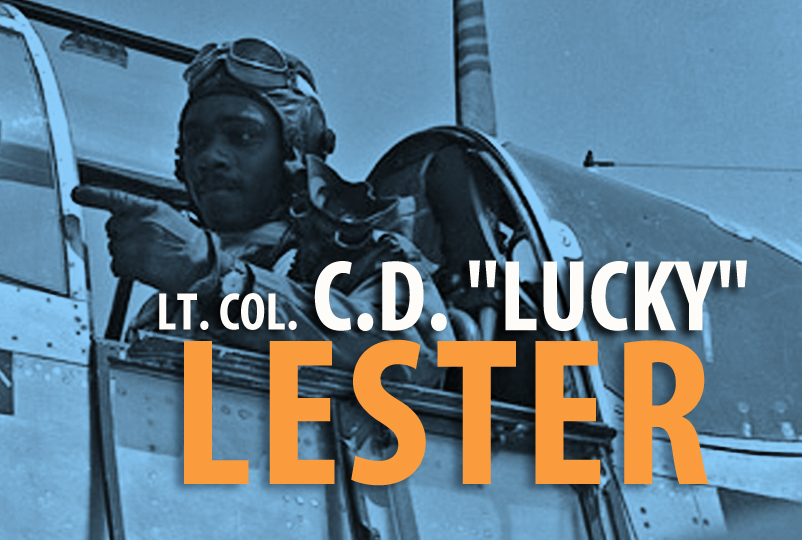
Lt. Col. C.D.